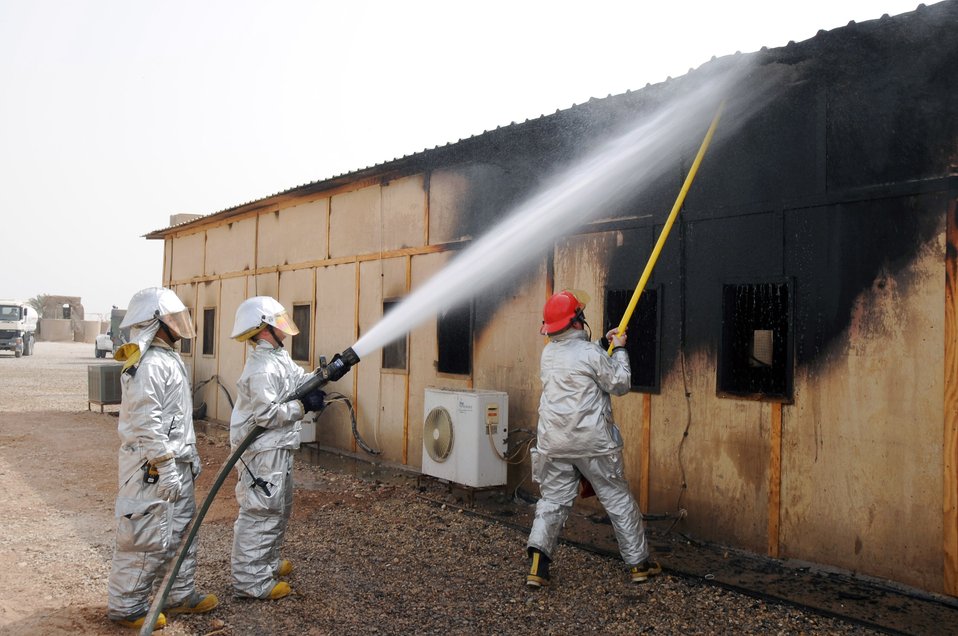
Airmen respond to coalition fire in Iraq

The 407th Expeditionary Civil Engineering Squadron firefighters extinguish spot fires on a building in the Romanian camp April 11 at Ali Base, Iraq. The Air Force emergency response forces respond to all emergencies here including coalition partners. The building was destroyed but there were no casualties.